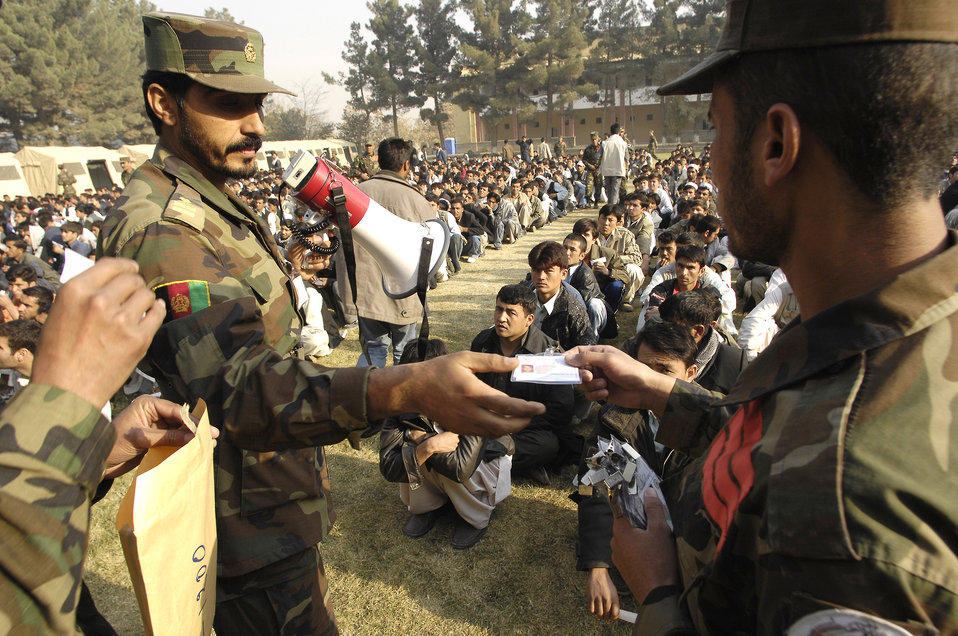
Airmen, Soldiers help establish military academy

Afghan National Army soldiers and academy cadets hand out identification cards to perspective cadets at the ANA Academy, Kabul, Afghanistan, Oct. 25. There are more than 1,800 perspective cadets here, all hoping to be one of the approximately 300 chosen for the new freshman class.